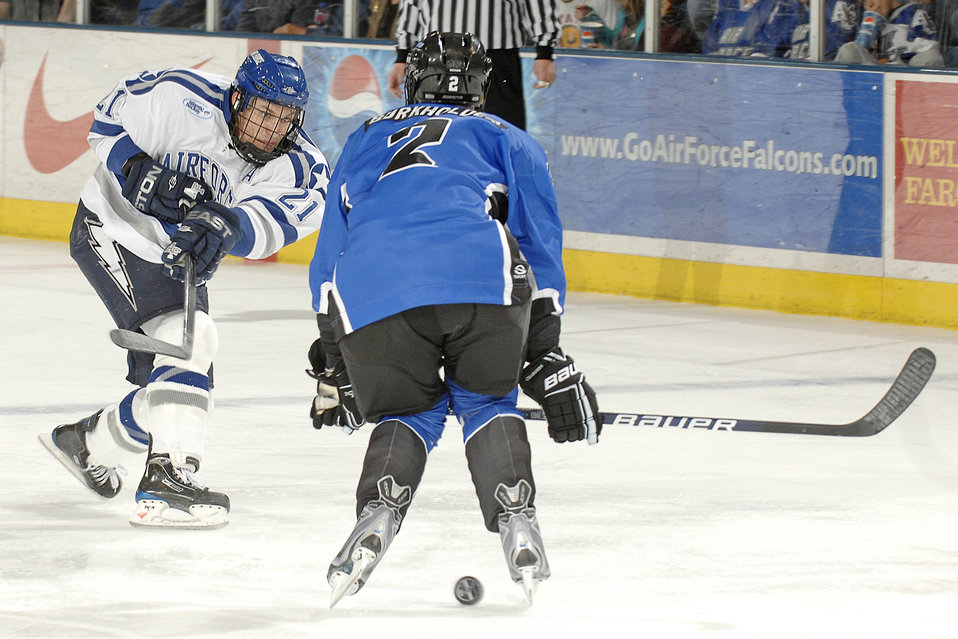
Falcons get out-Charged!

Falcon junior Jacques Lamoureux takes a shot through the legs of opponent Ryan Burkholder in the University of Alabama-Huntsville game at the U.S. Air Force Academy Cadet Ice Arena Oct 17, 2009. The UAH Chargers held off the Falcons for a 4-2 win.